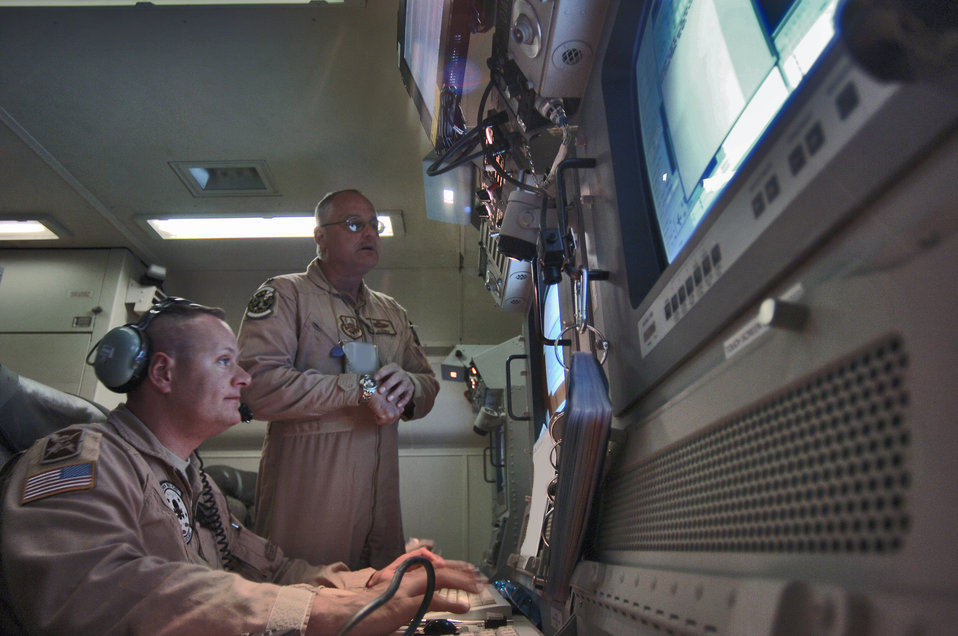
Joint STARS

SOUTHWEST ASIA (AFPN) -- Lt. Col. Jim Roman (right), talks with Army Sgt. 1st Class Steven Jamie about the timing of communications to Army ground units. Colonel Roman is the mission crew commander is in charge of the mission crew and decisions made aboard this E-8C Joint Surveillance and Target Attack Radar System aircraft. He is responsible for all outgoing communications. Sergeant Jamie is an airborne target surveillance supervisor, is a communicator with Army units and common ground stations, using various radio and satellite communication devices.